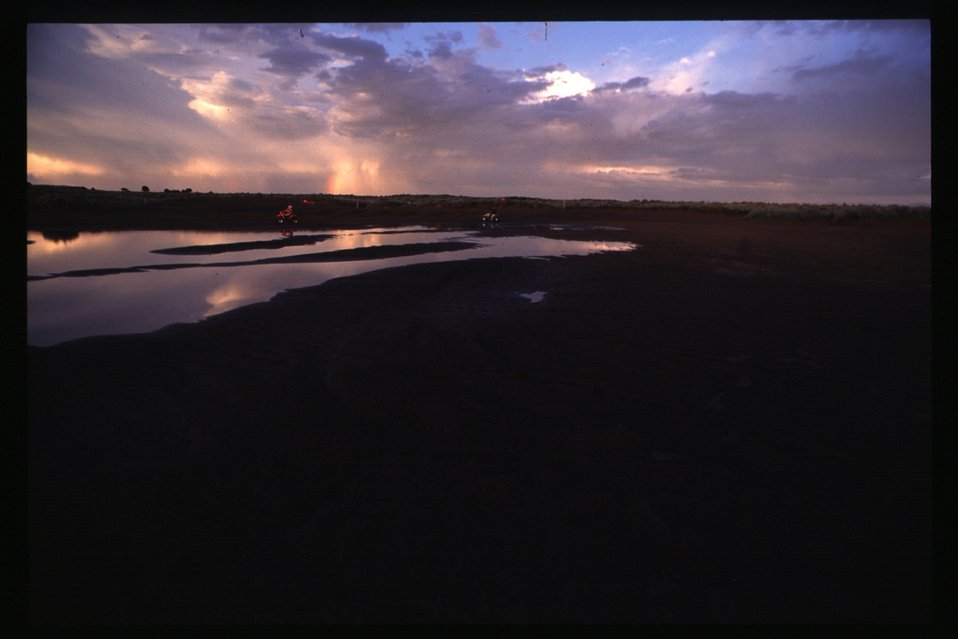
Recreation St Anthony Sand Dunes Off Highway Vehicles Idaho Falls Field Office USRD Upper Snake River District